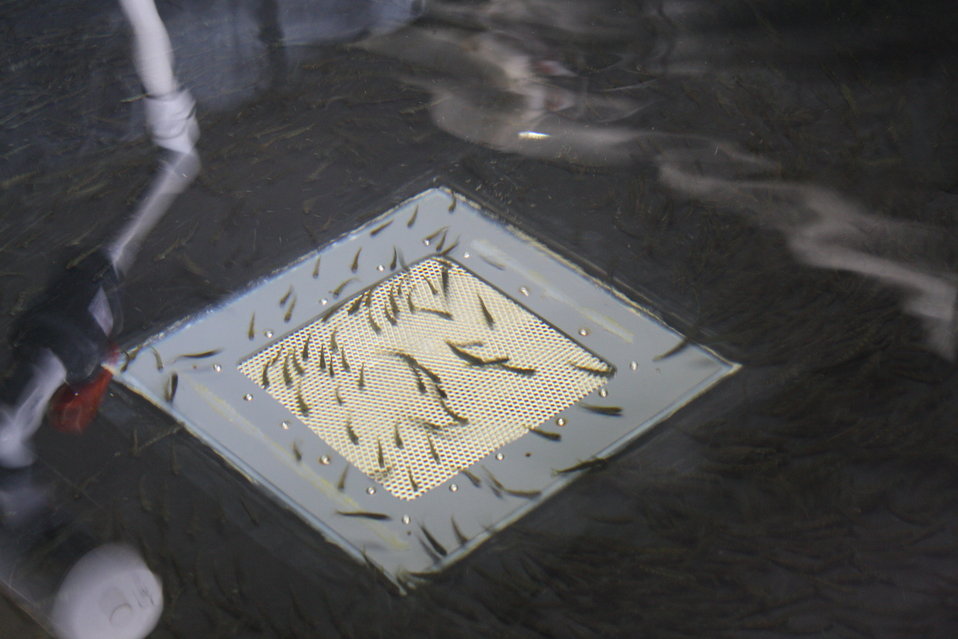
Nashua National Fish Hatchery welcomes regional office employees

Salmon fry in tank.